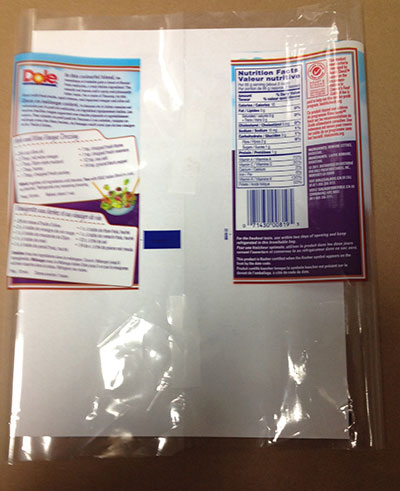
RECALLED – Variety of Bagged salads

March 13, 2014 – Product Recall – Dole Fresh Vegetables Voluntarily Recalls Limited Number of Bagged Salads Due to Possible Health Risk.